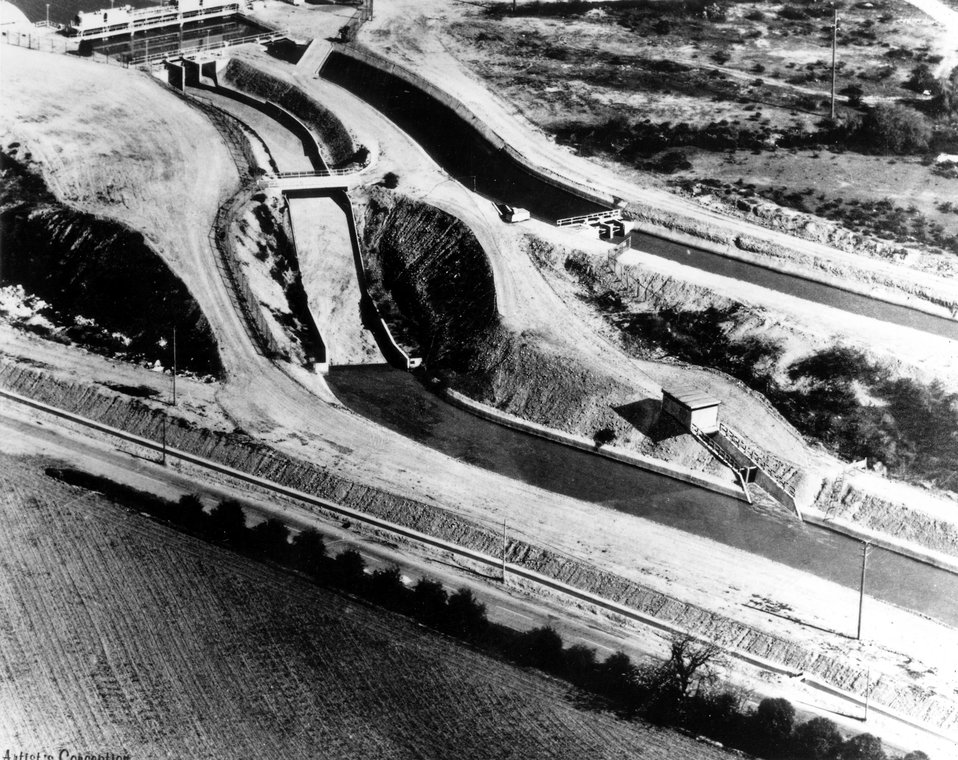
Salt River Ag. Imp & Power Dist., South Canal/Mesa Az. Power 1,400 KW - Energy (MWH/YR) 170,000 - NO. OF UNITS 1 FLOW (cfs) 540-HEAD (FT) 35... C. 1980